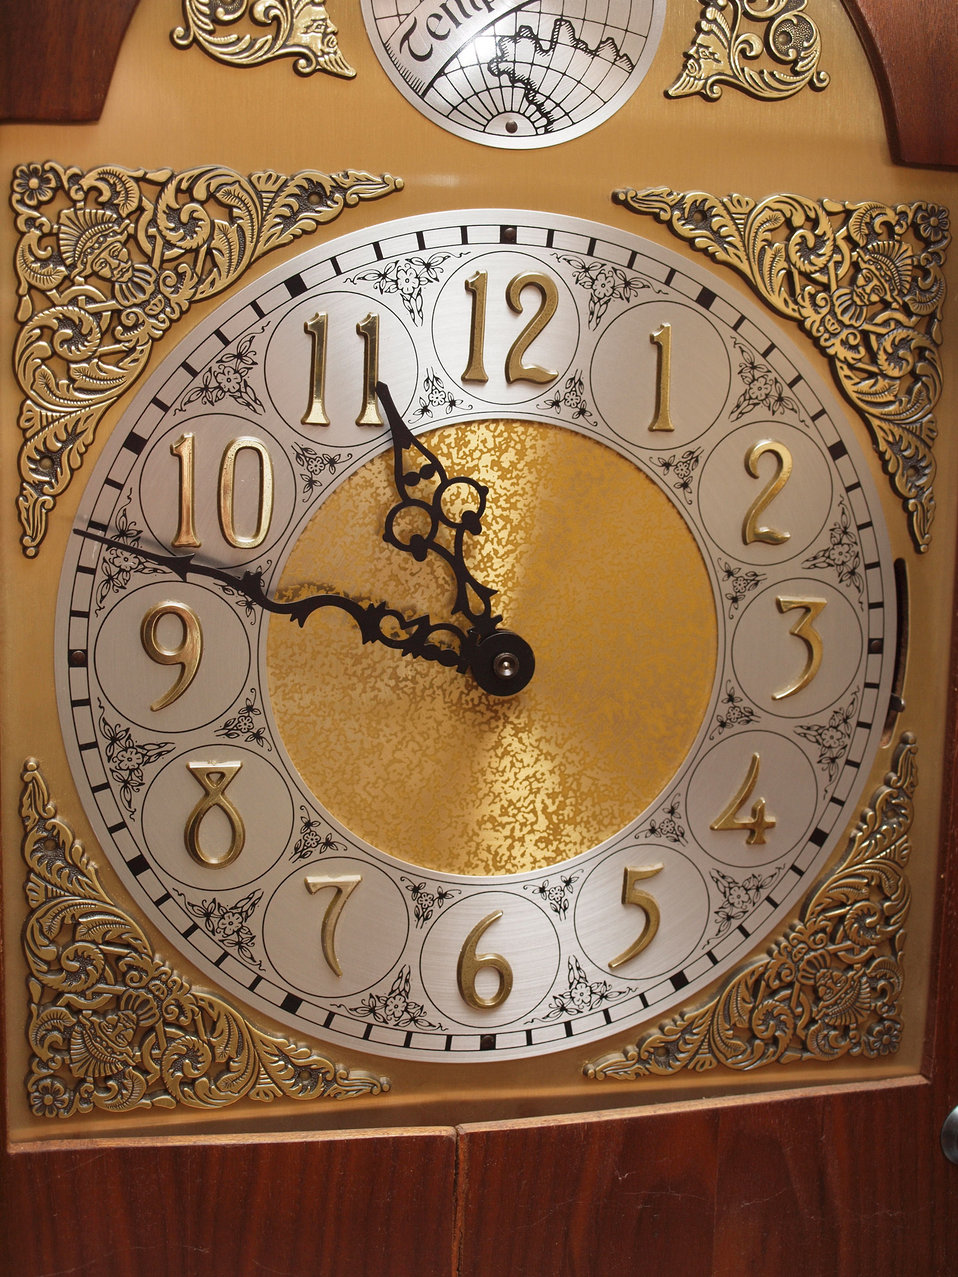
Clock face

Golden clock face of a grandfather clock.